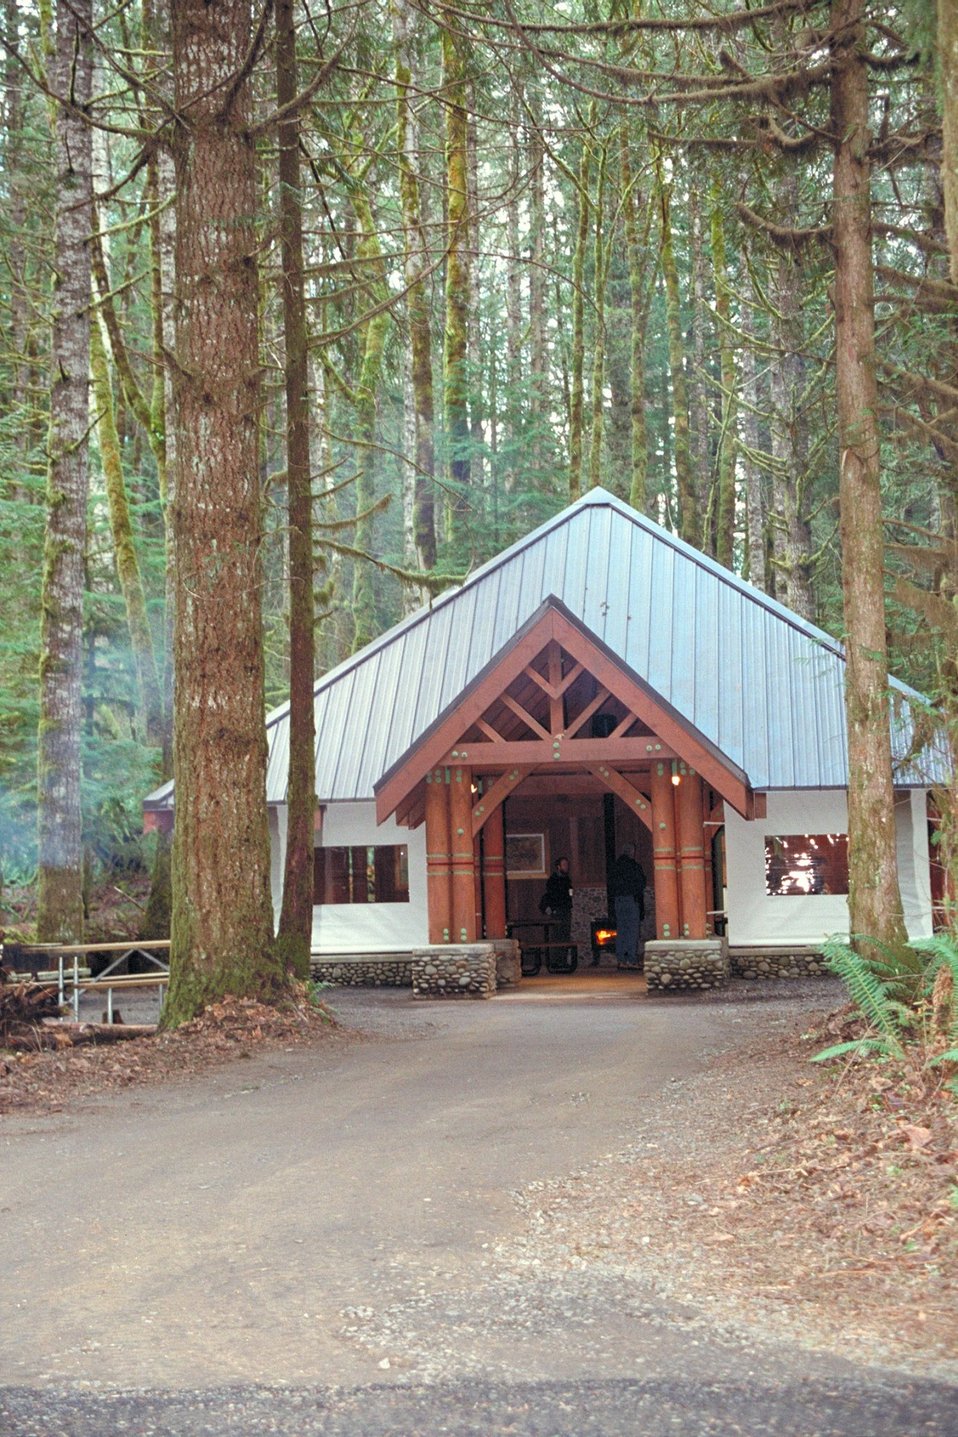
Cascade Stream Watch is an environmental education program conducted at BLM's Wildwood Recreation site.